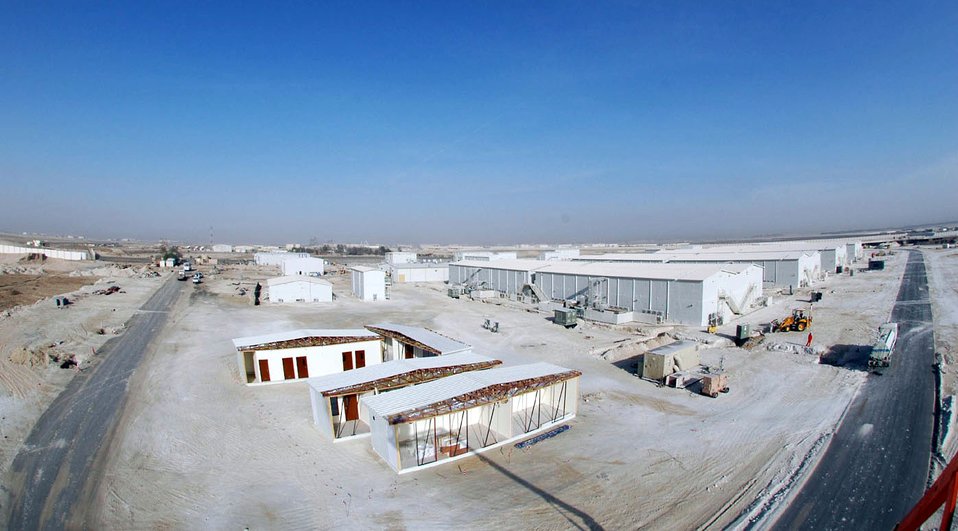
TCA overview

SOUTHWEST ASIA (AFPN) -- From a bird's eyes view the new Temporary Cantonment Area for the 380th Air Expeditionary Wing begins to take shape. Units with the Wing are expected to move into the new facilities in April.